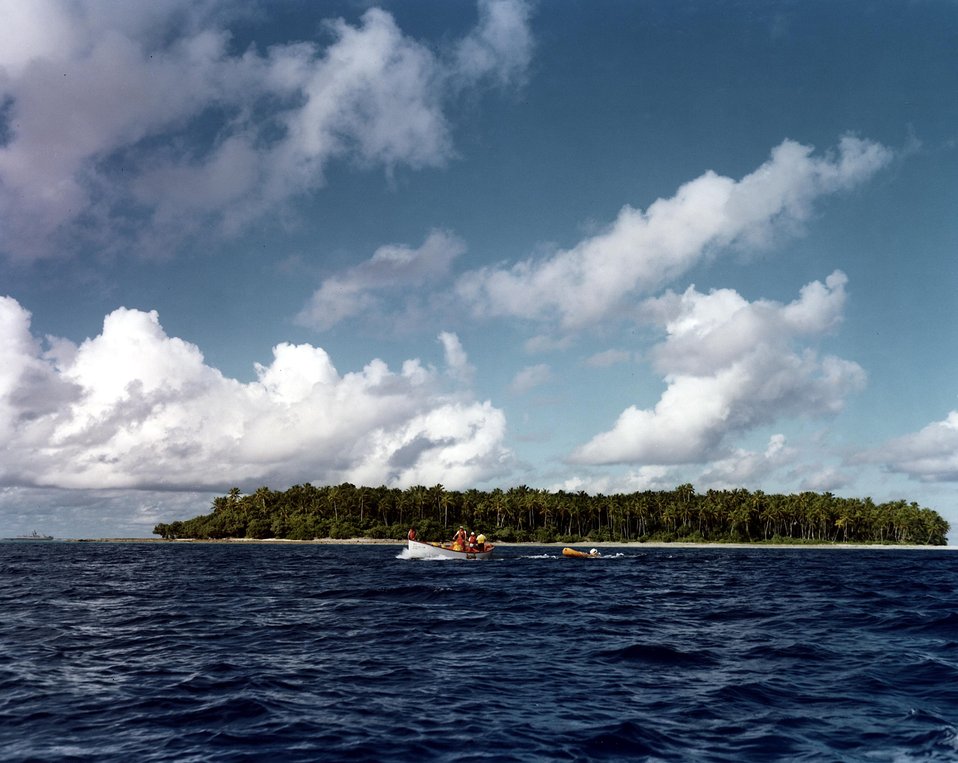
Bikini